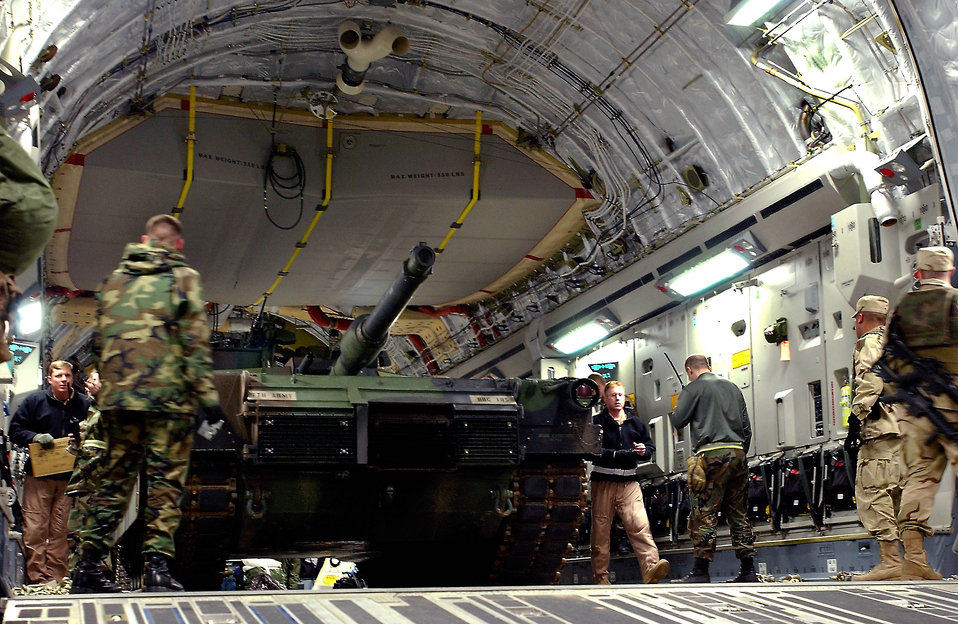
Abrams lift

RAMSTEIN AIR BASE, Germany -- Ground crews load a 66 ton Abrams tank onto a C-17 Globemaster III aircraft at Ramstein Air Base, Germany. The aircraft, from the 17th Airlift Squadron, Charleston Air Force Base, S.C., delivered the Army's main battle tank to Bashur Airfield, Iraq.